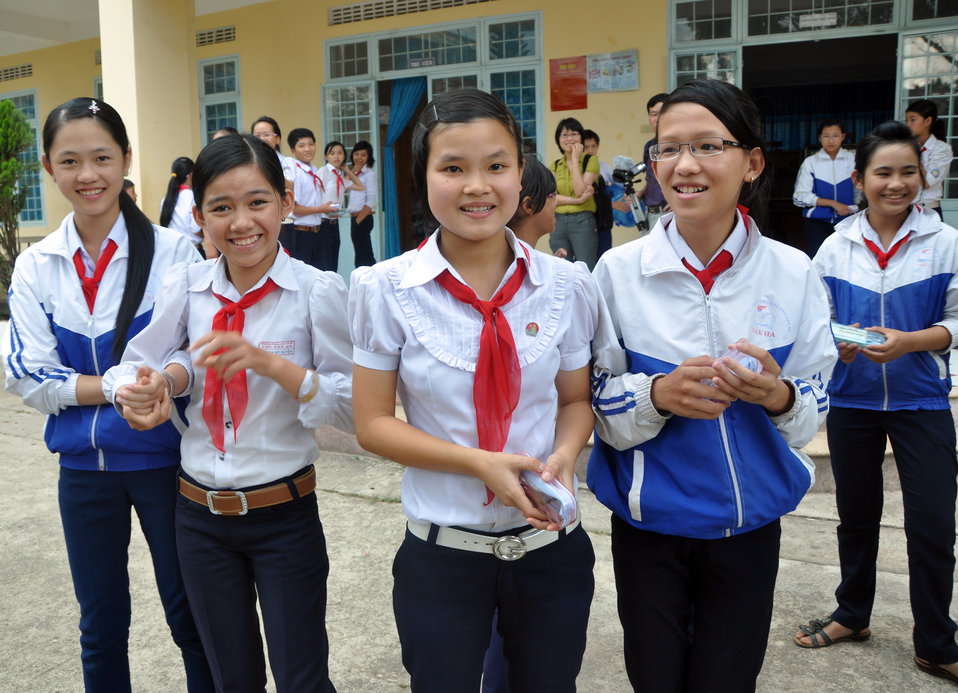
USAID and partners support eyecare, glasses, in Kon Tum

Eyeglasses examination at Luong The Vinh School, Kon Tum Province